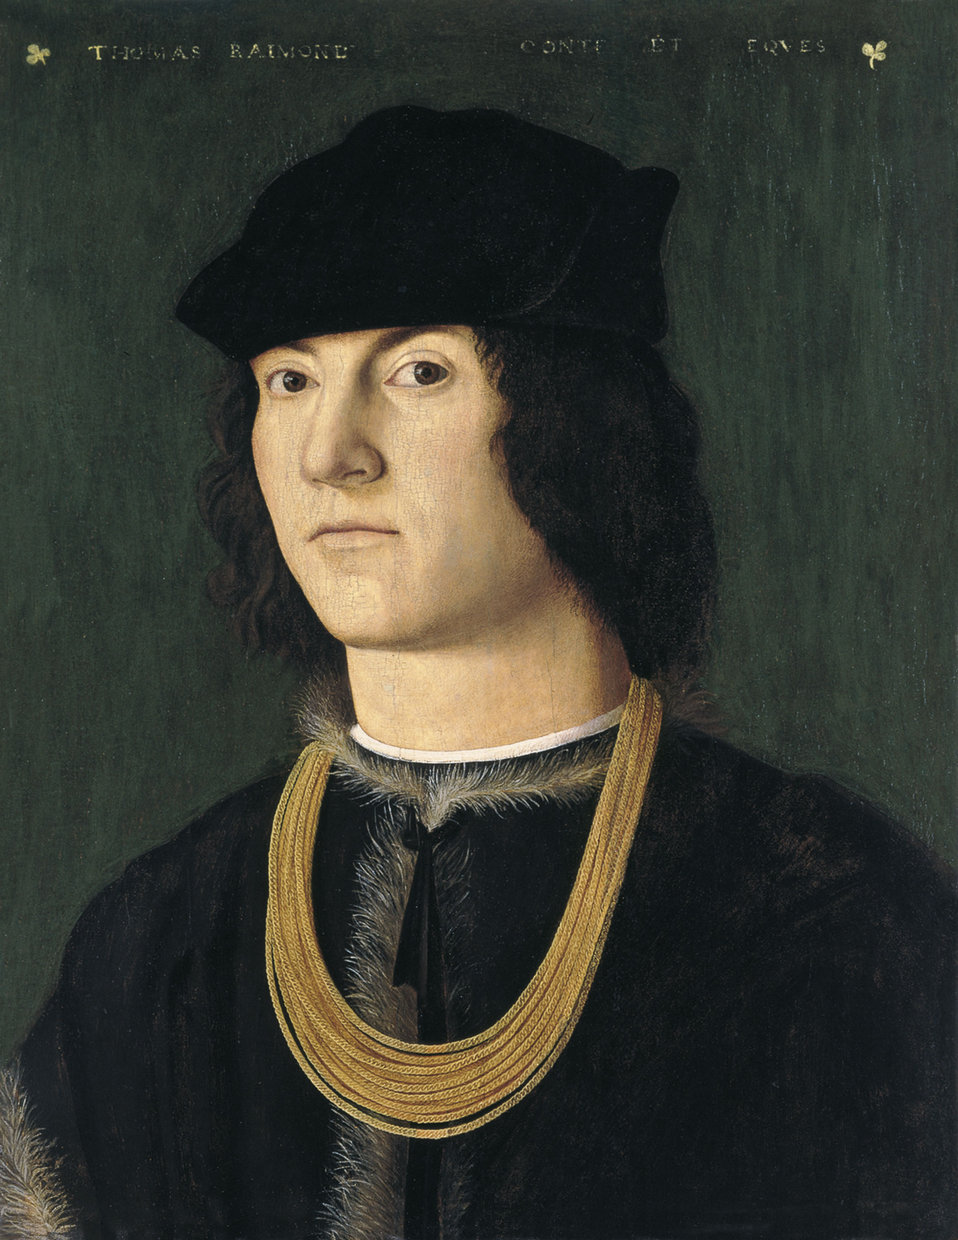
Amico Aspertini - Retrato de Tommaso Raimondi